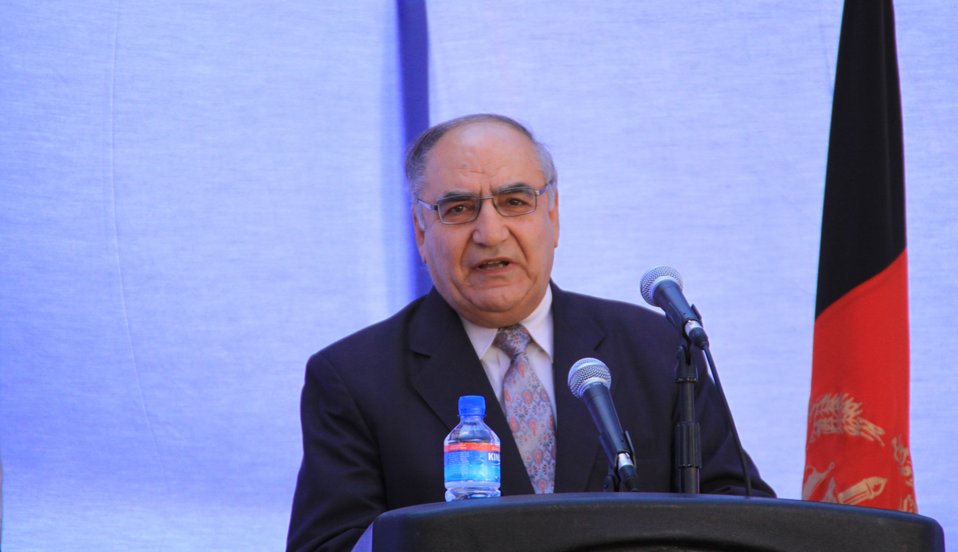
105 MW Tarakhil Power Plant Handover